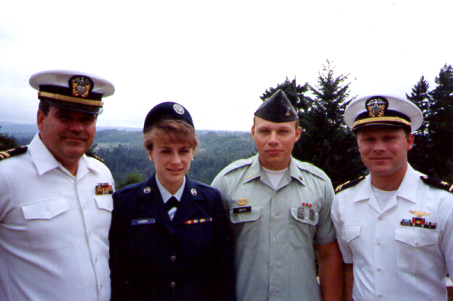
Kim Garner, a Fish and Wildlife Biologist in the Oregon Fish and Wildlife Service, served in the U.S. Air Force from 1989 to 1997 as a Secure Communications Specialist and Paralegal Specialist. Military service runs in her family; she's pictured here in 1991 with her Dad, Al (U.S. Navy); brother, Ken (U.S. Army Reserves; and brother, Mike (U.S. Navy). She works in the Endangered Species Division managing recovery of the threatened Oregon chub and assisting with various other species.